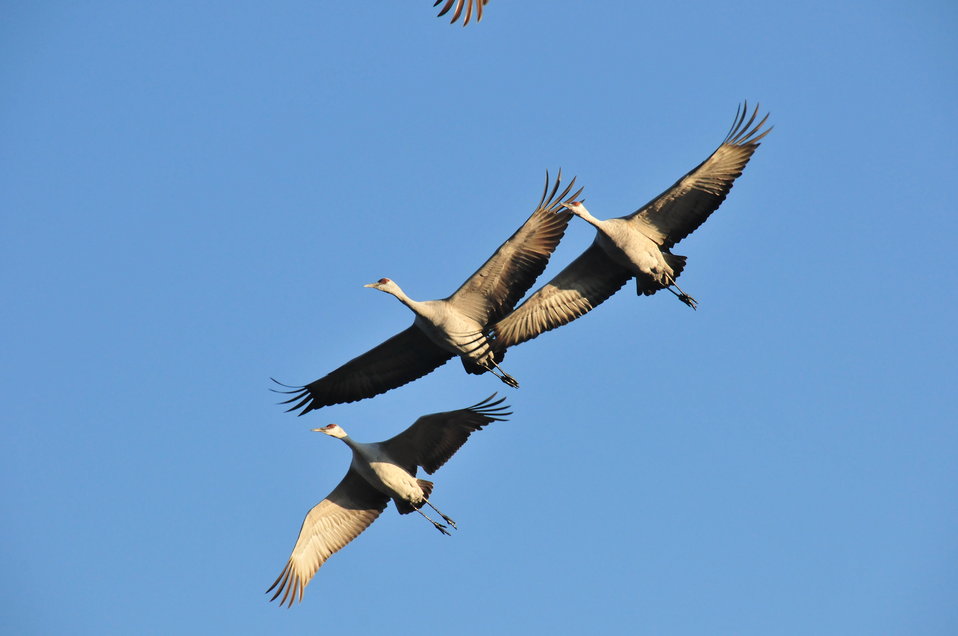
Sandhill Crane Trio